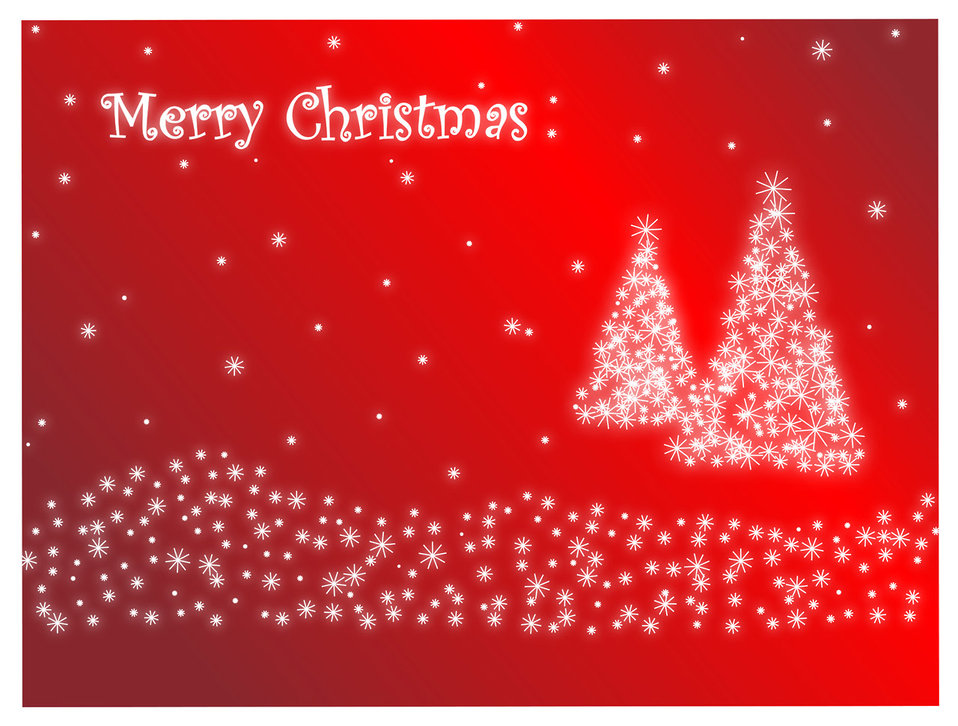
Merry christmas in red

White christmas trees on a red background.